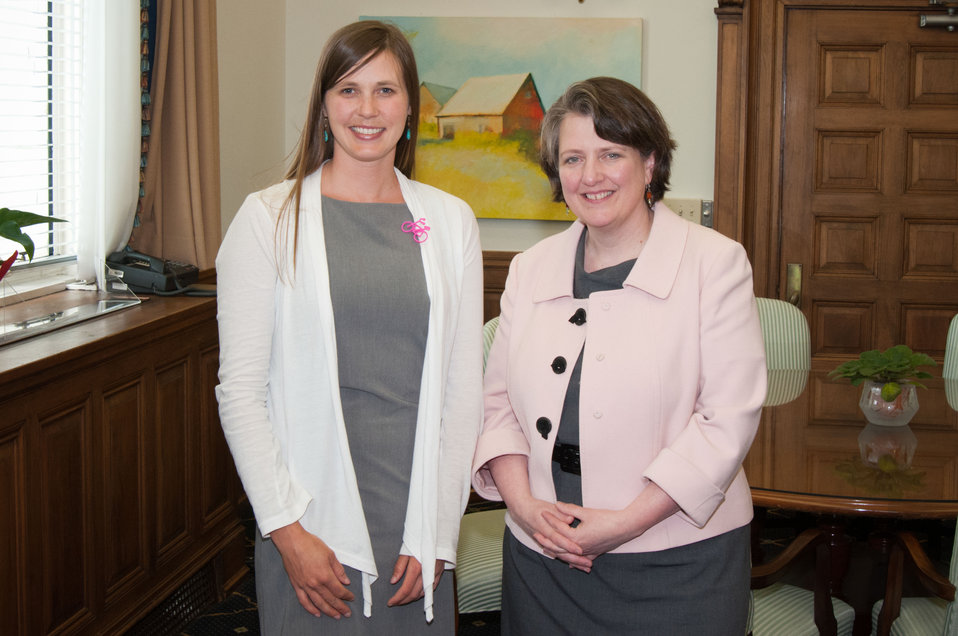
Sara Salo, Director, School Food Tour (left) and Agriculture Deputy Secretary, Dr. Kathleen Merrigan (right) met at the United States Department of Agriculture, on Tuesday, April 17, 2012 in Washington, DC. Salo is riding a bicycle across the United States to promote Healthy School Foods, Youth Activity and Exercise to promote involvement in First Lady Michelle Obama’s, “Let’s Move” campaign.